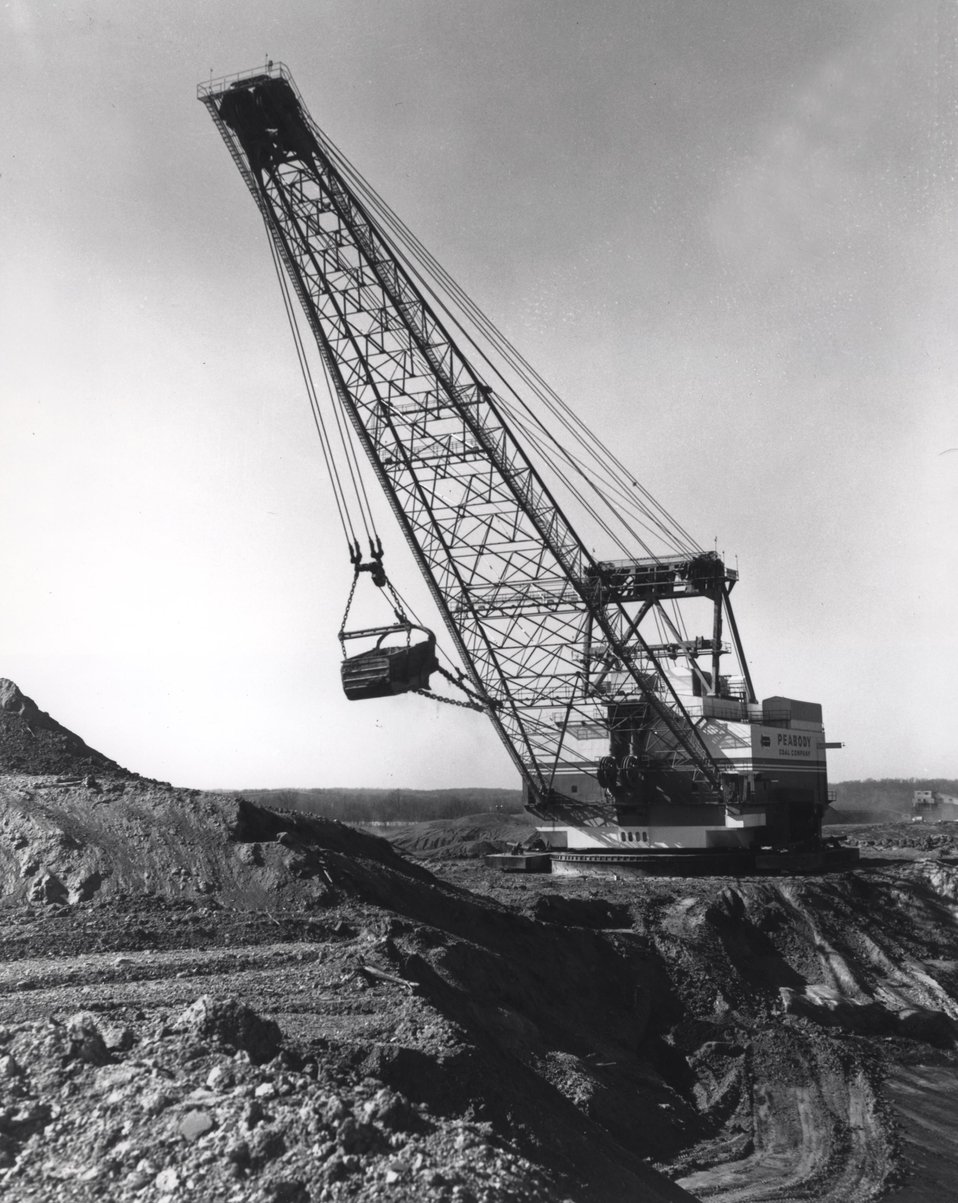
A walking dragline swings an 85-cubic-yard bucket on the end of a 275-foot boom. This machine works at the Homestead mine of Peabody Coal Co. in Western Kentucky. c. 1967